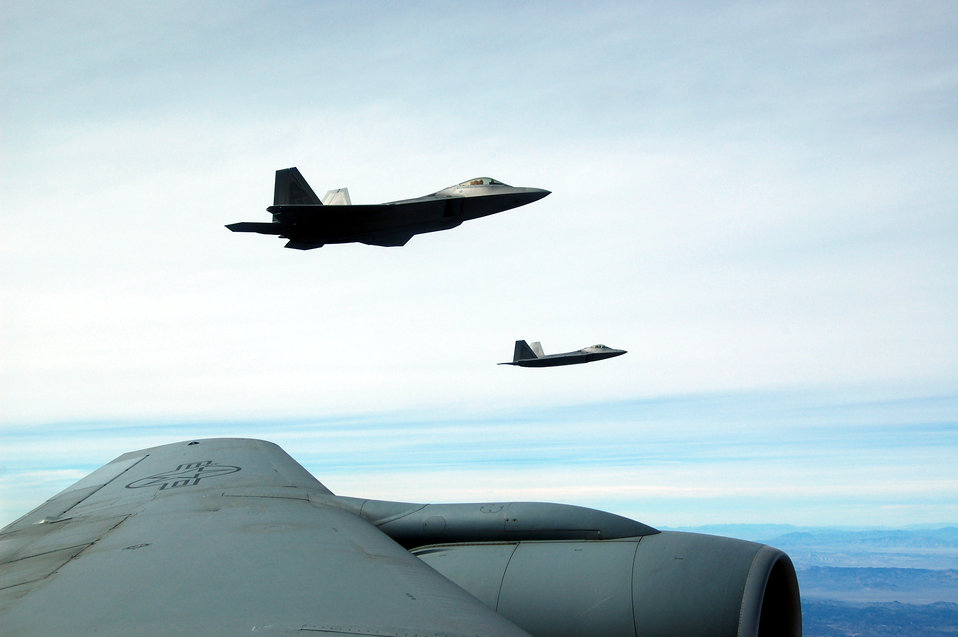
Raptors invade Nevada

An F-22 Raptor flys off the left wing of a KC-135 Stratotanker during the Red Flag Exercise Feb 7. Two KC-135 Stratotankers from the 319th Air Refueling Wing at Grand Forks Air Force Base make up the lead tanker unit during the exercise. Red Flag is an exercise designed to hone the warfighting skills of Air Force pilots for conflicts.